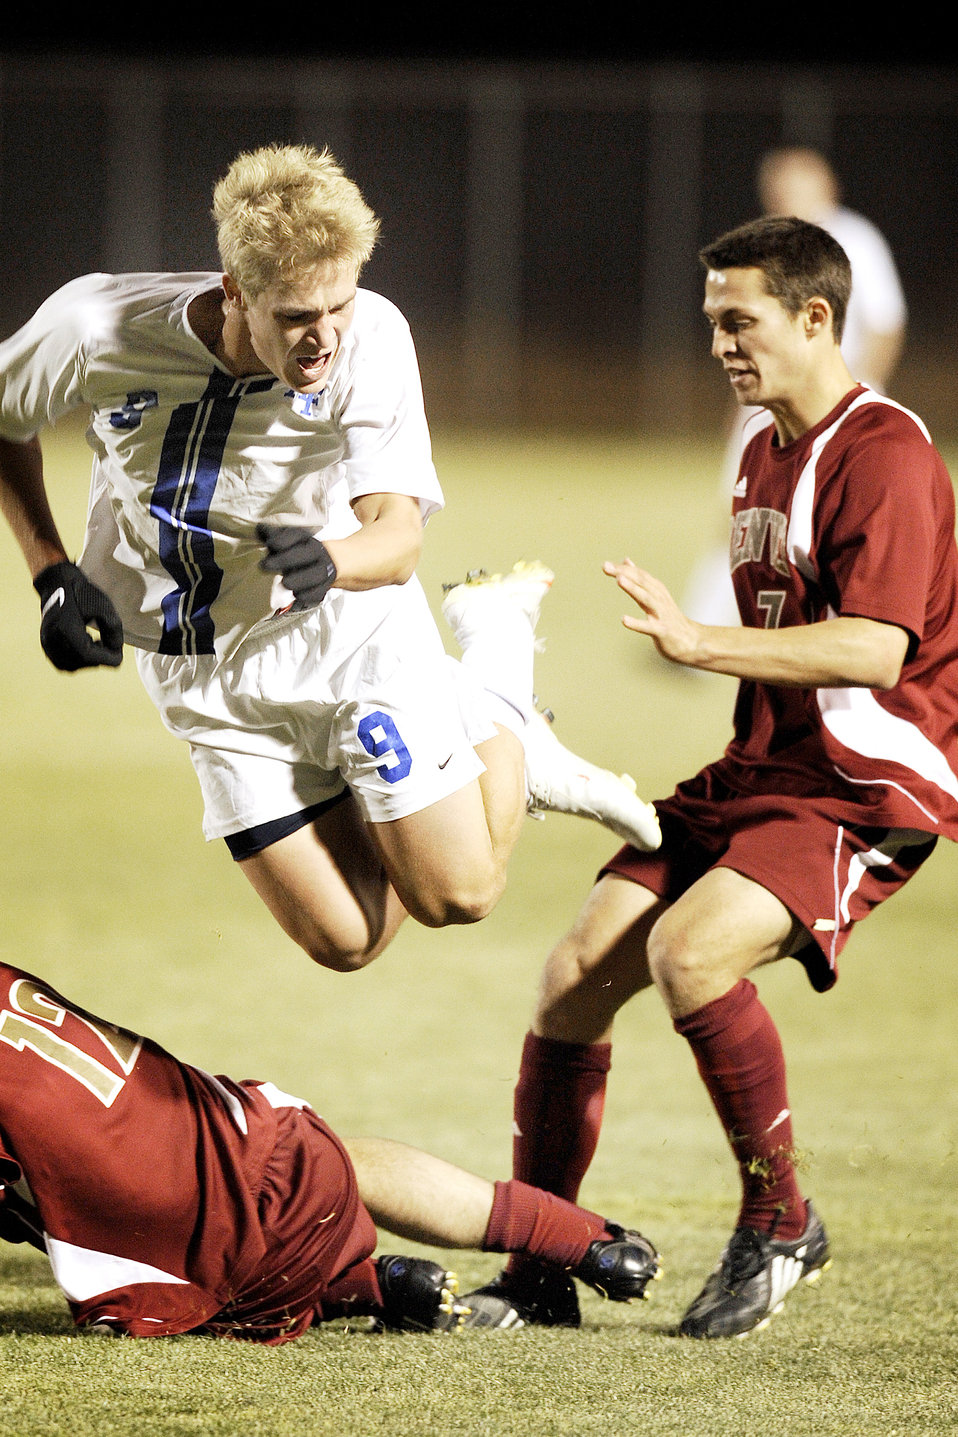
Air Force Academy

U.S. Air Force Academy, CO -- Freshman forward Garrett Getschow is tripped up during action against the University of Denver at the Cadet Soccer Stadium Nov 7. Denver defeated the Falcons 2-0 in the regular-season finale for both teams. The Falcons fell to 7-8-1, and 2-5 in league play. The two teams will meet again in five days in the first round of the MPSF tournament on Nov 12 at the University of Denver Stadium. Air Force finished the season with a 5-1-1 record at home, and honored its seven seniors in a pre-game ceremony celebrating the final home game of their career.